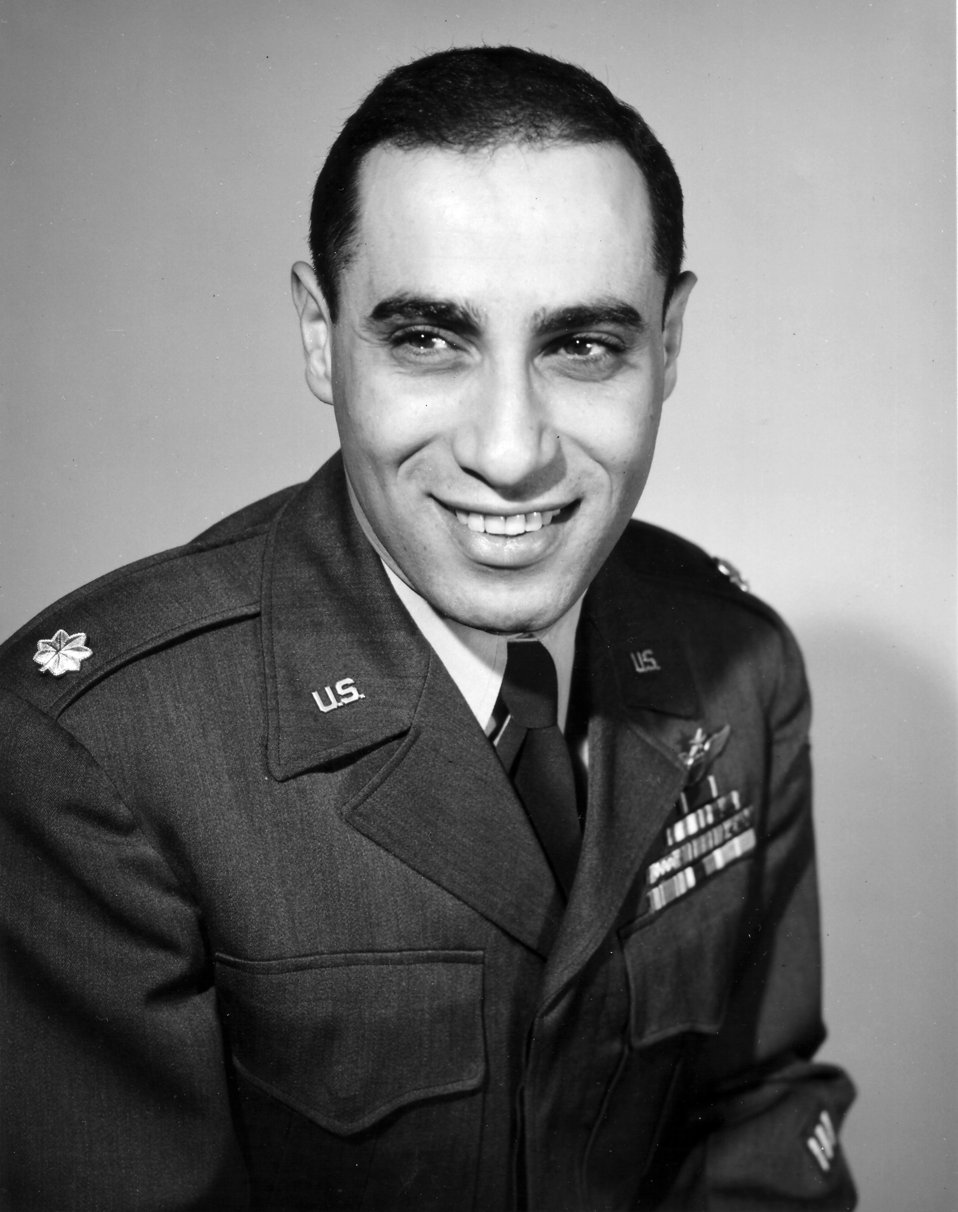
James Jabara

1940's -- James Jabara